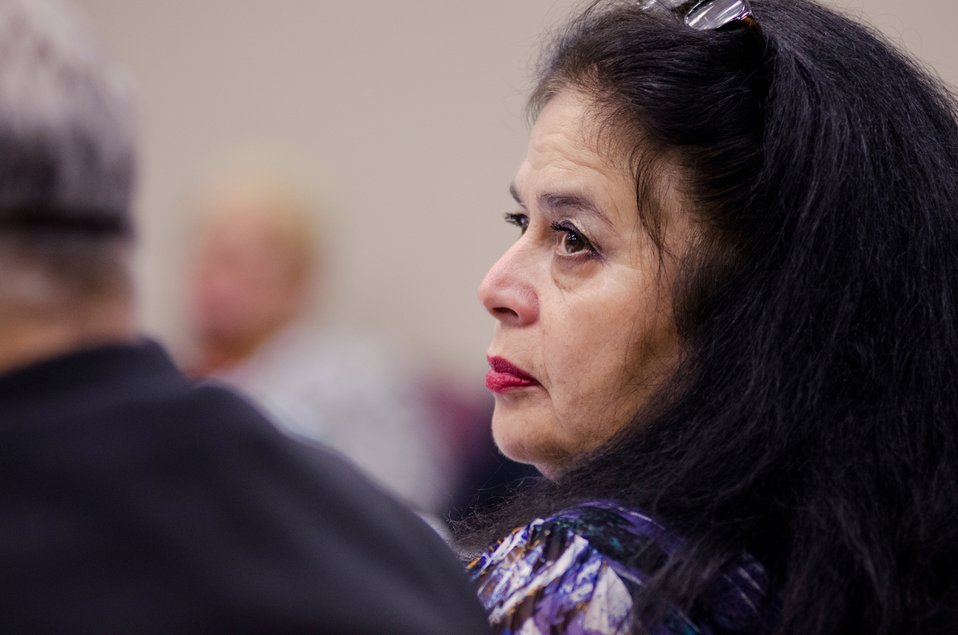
Director of Office of Tribal Relations and the Designated Federal Officer (DFO) for this Council Joanna Mounce Stancil during the first administrative/training meeting of the U.S. Department of Agriculture's (USDA) Council for Native American Farming and Ranching (CNAFR). held on Monday, Aug. 13, 2012 at the USDA headquarters Whitten Building, in Washington, D.C. CNAFR was created to advise the Secretary on ways to eliminate barriers to participation for Native American Farmers and Ranchers in USDA programs. The Council was established as part of the Keepseagle settlement, and is conducted under the oversight of USDA's Office of Tribal Relations, which is part of the Office of the Secretary of Agriculture. The Director of Tribal Relations Joanna Mounce Stancil serves as Designated Federal Official (DFO) for the Council.